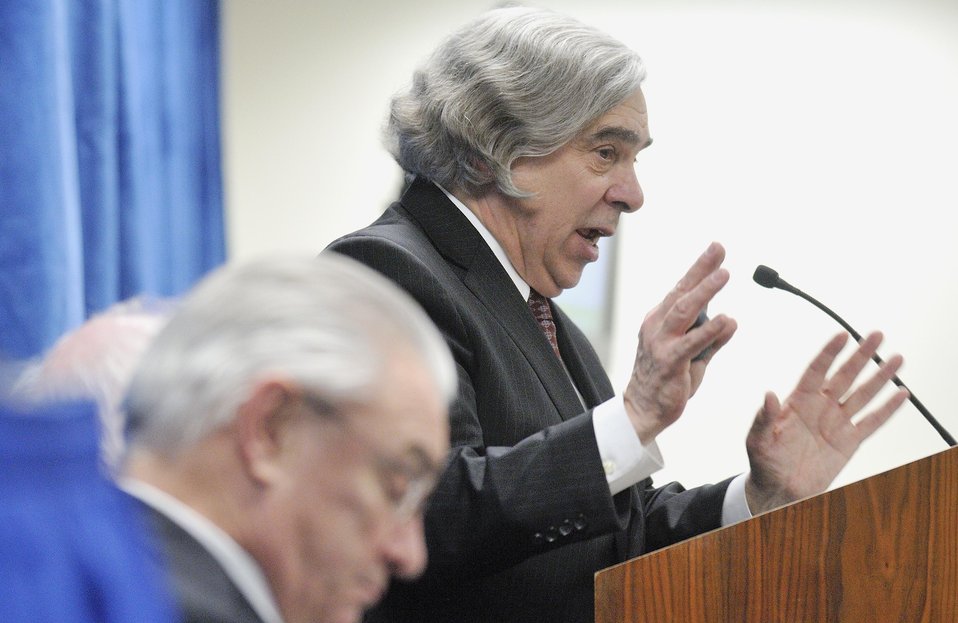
156

SECRETARY E. MONIZ - 2014 DOE BUDGET ROLL OUT ON MARCH 4, 2014